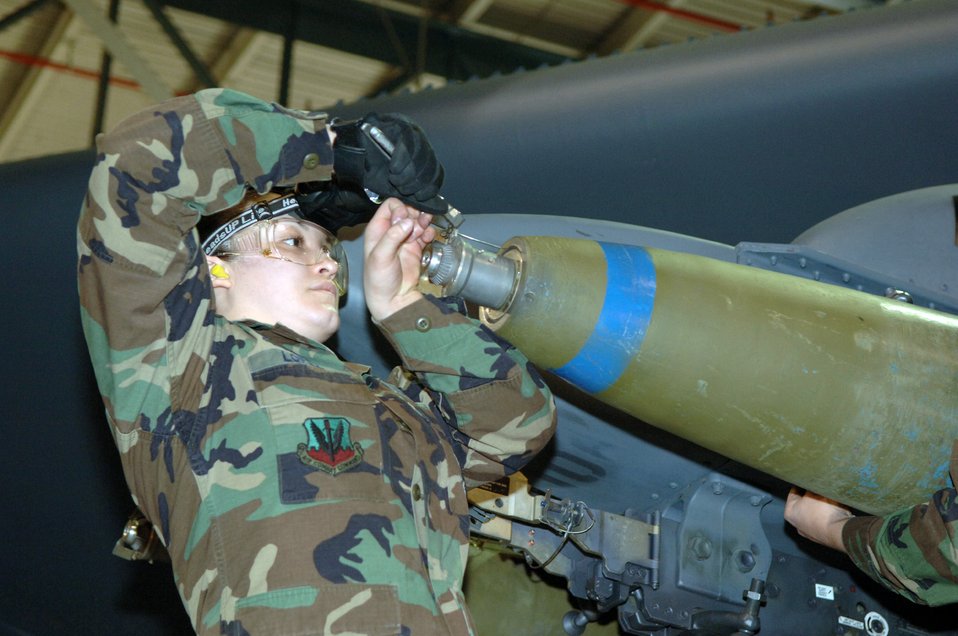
Secure bomb

MINOT AIR FORCE BASE, N.D. (AFPN) -- Senior Airman Stephanie Lopez prepares a bomb during a load crew competition here Jan. 27. The crews loaded nine Mk-82 500-pound general purpose bombs during the competition. The four-person crews were graded on teamwork, safety, precision and speed. Airman Lopez is a weapons loader assigned to the 5th Aircraft Maintenance Squadron.